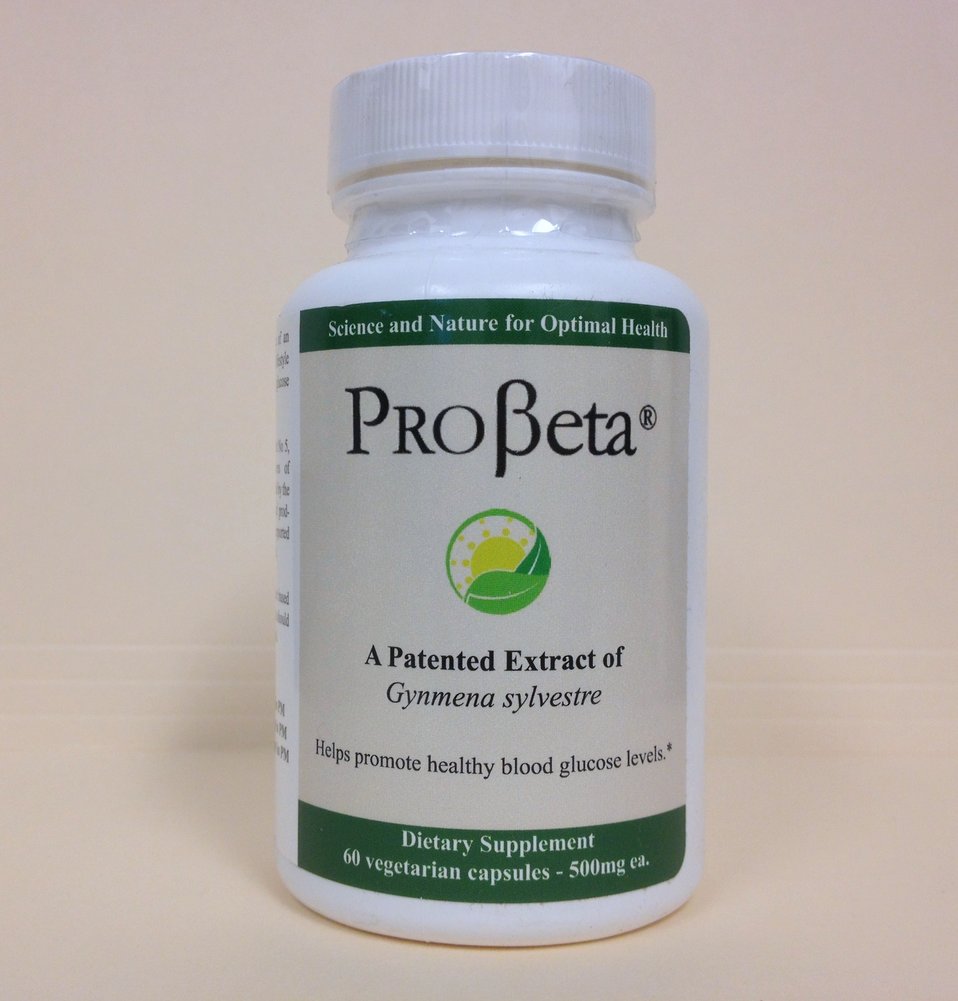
Illegally Sold Diabetes Treatments - ProBeta

This product is promoted with unapproved claims to prevent or treat diabetes and/or its complications. FDA warns consumers to avoid unproven and potentially unsafe products sold as treatments for diabetes.